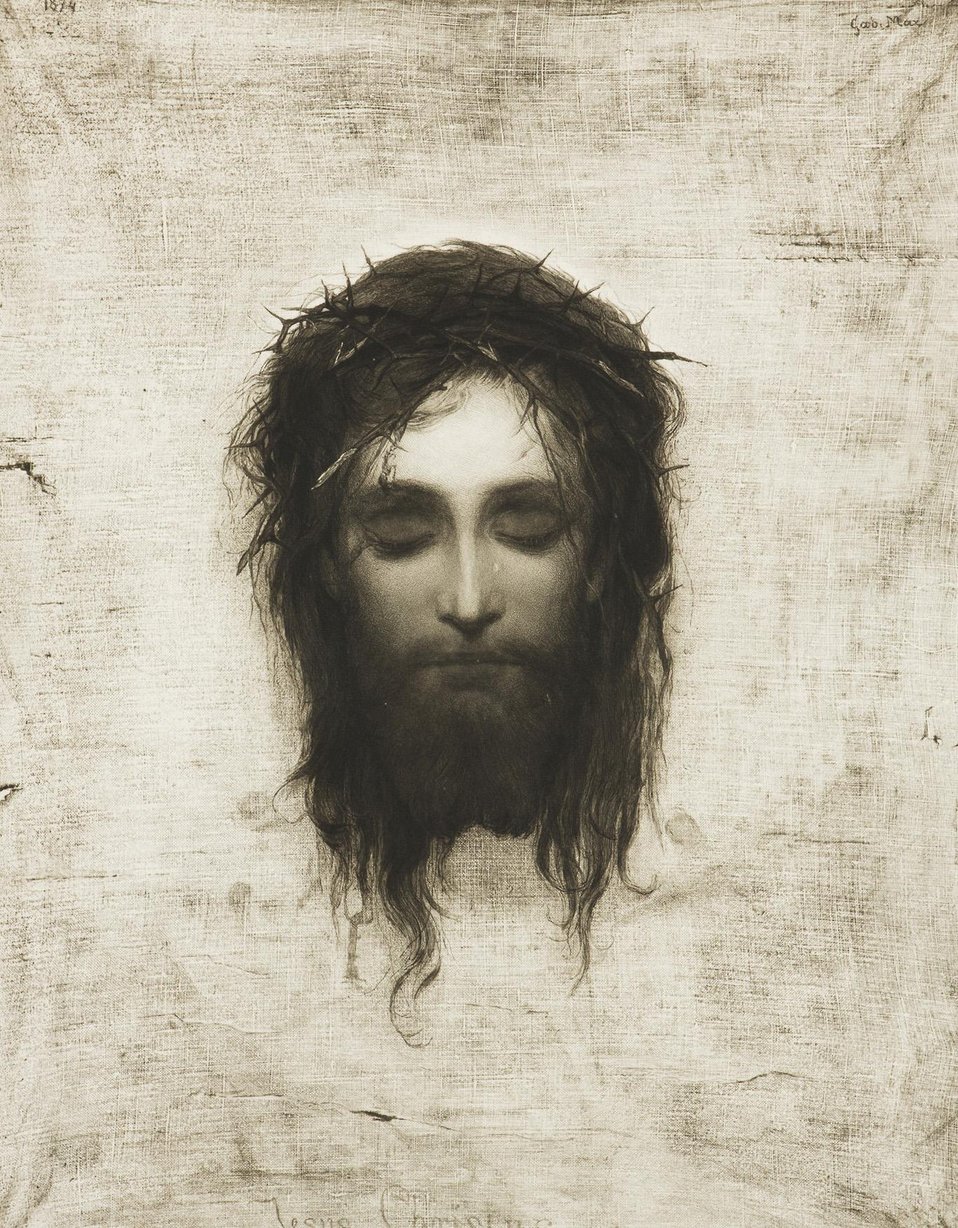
Deutsch: Veraikon, Heliogravur/Papier, 53 x 43 cm